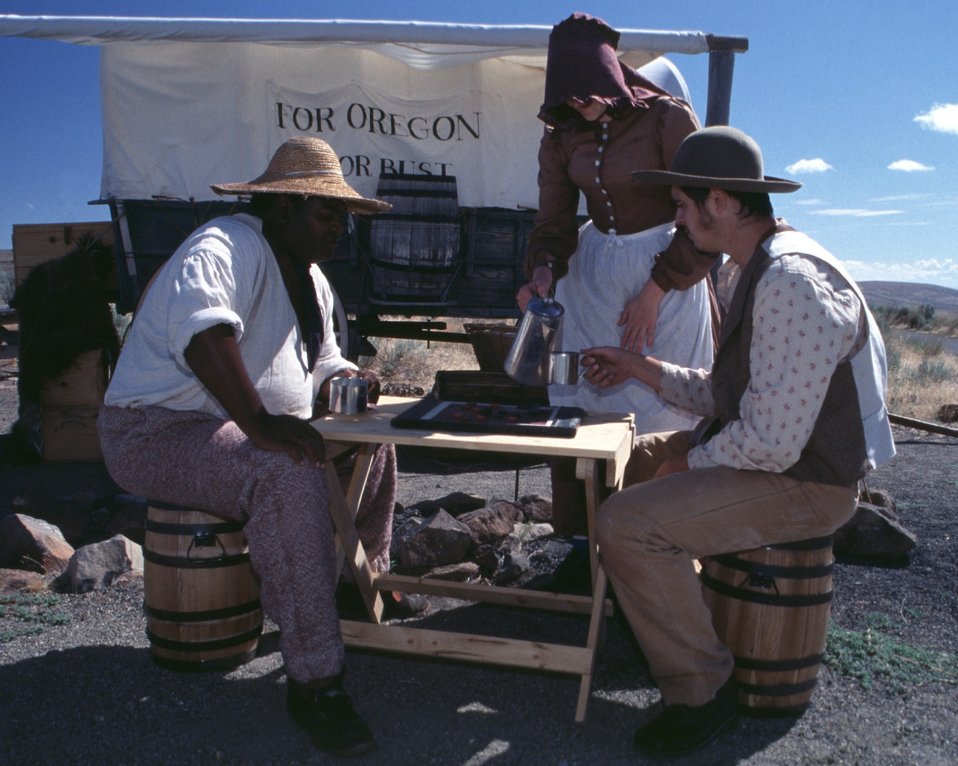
Dylan Prichertt, Rebecca Crow, and Brandon Kames portrqay oregon Trail Pioneers at a wagon encampment.